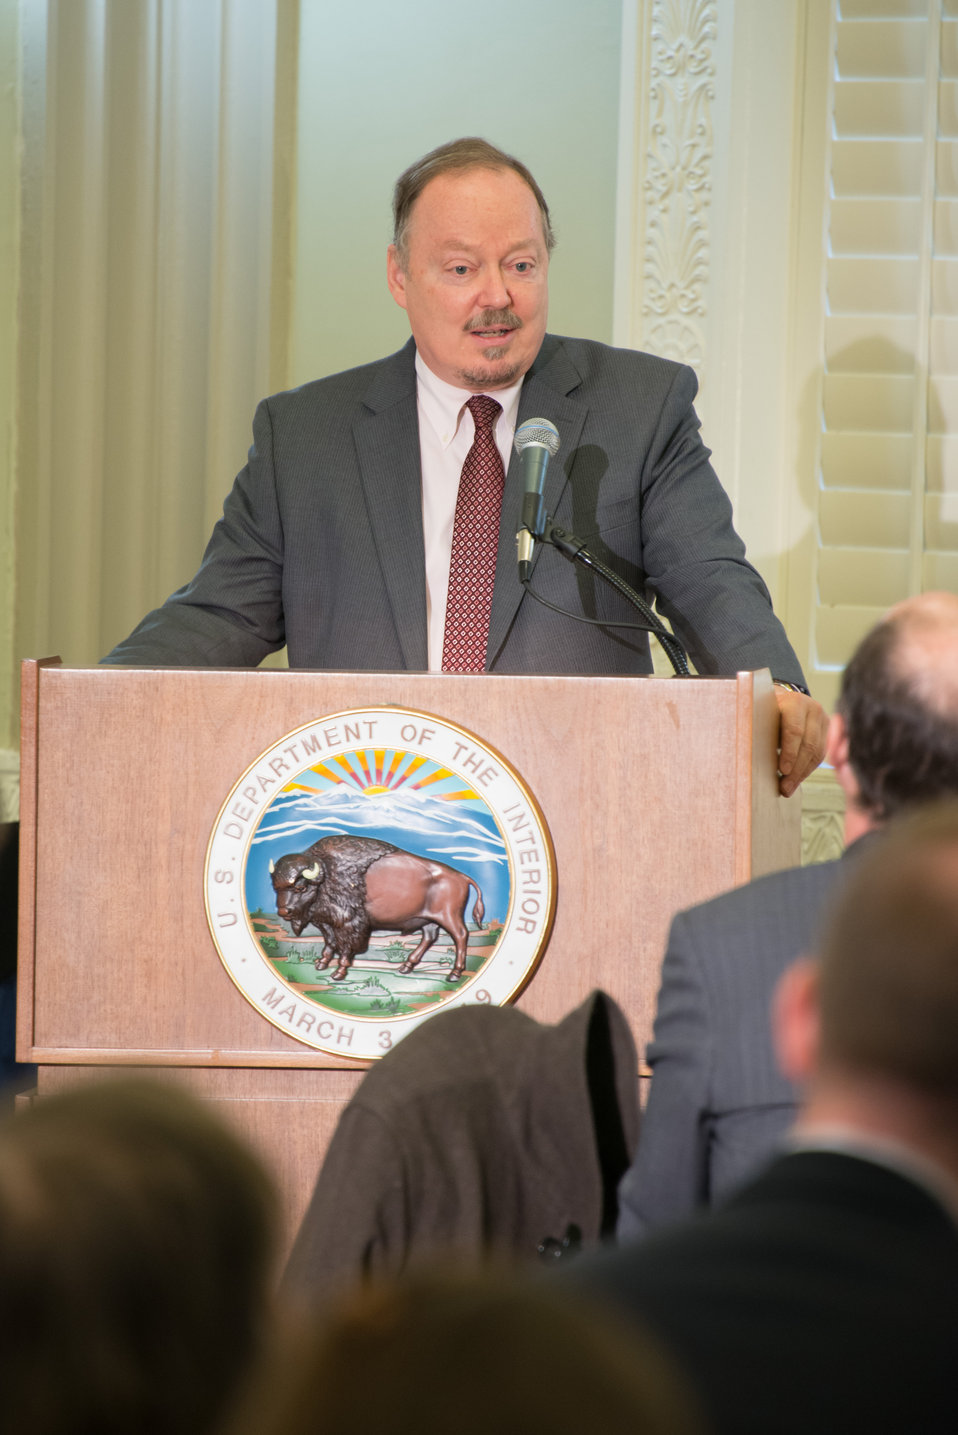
Public Meeting of Advisory Council on Wildlife Trafficking

Robert Dreher, Principal Deputy Assistant Attorney General for Environment and Natural Resources Division at the Department of Justice, speaking to the Advisory Council on Wildlife Trafficking and attendees to the public meeting